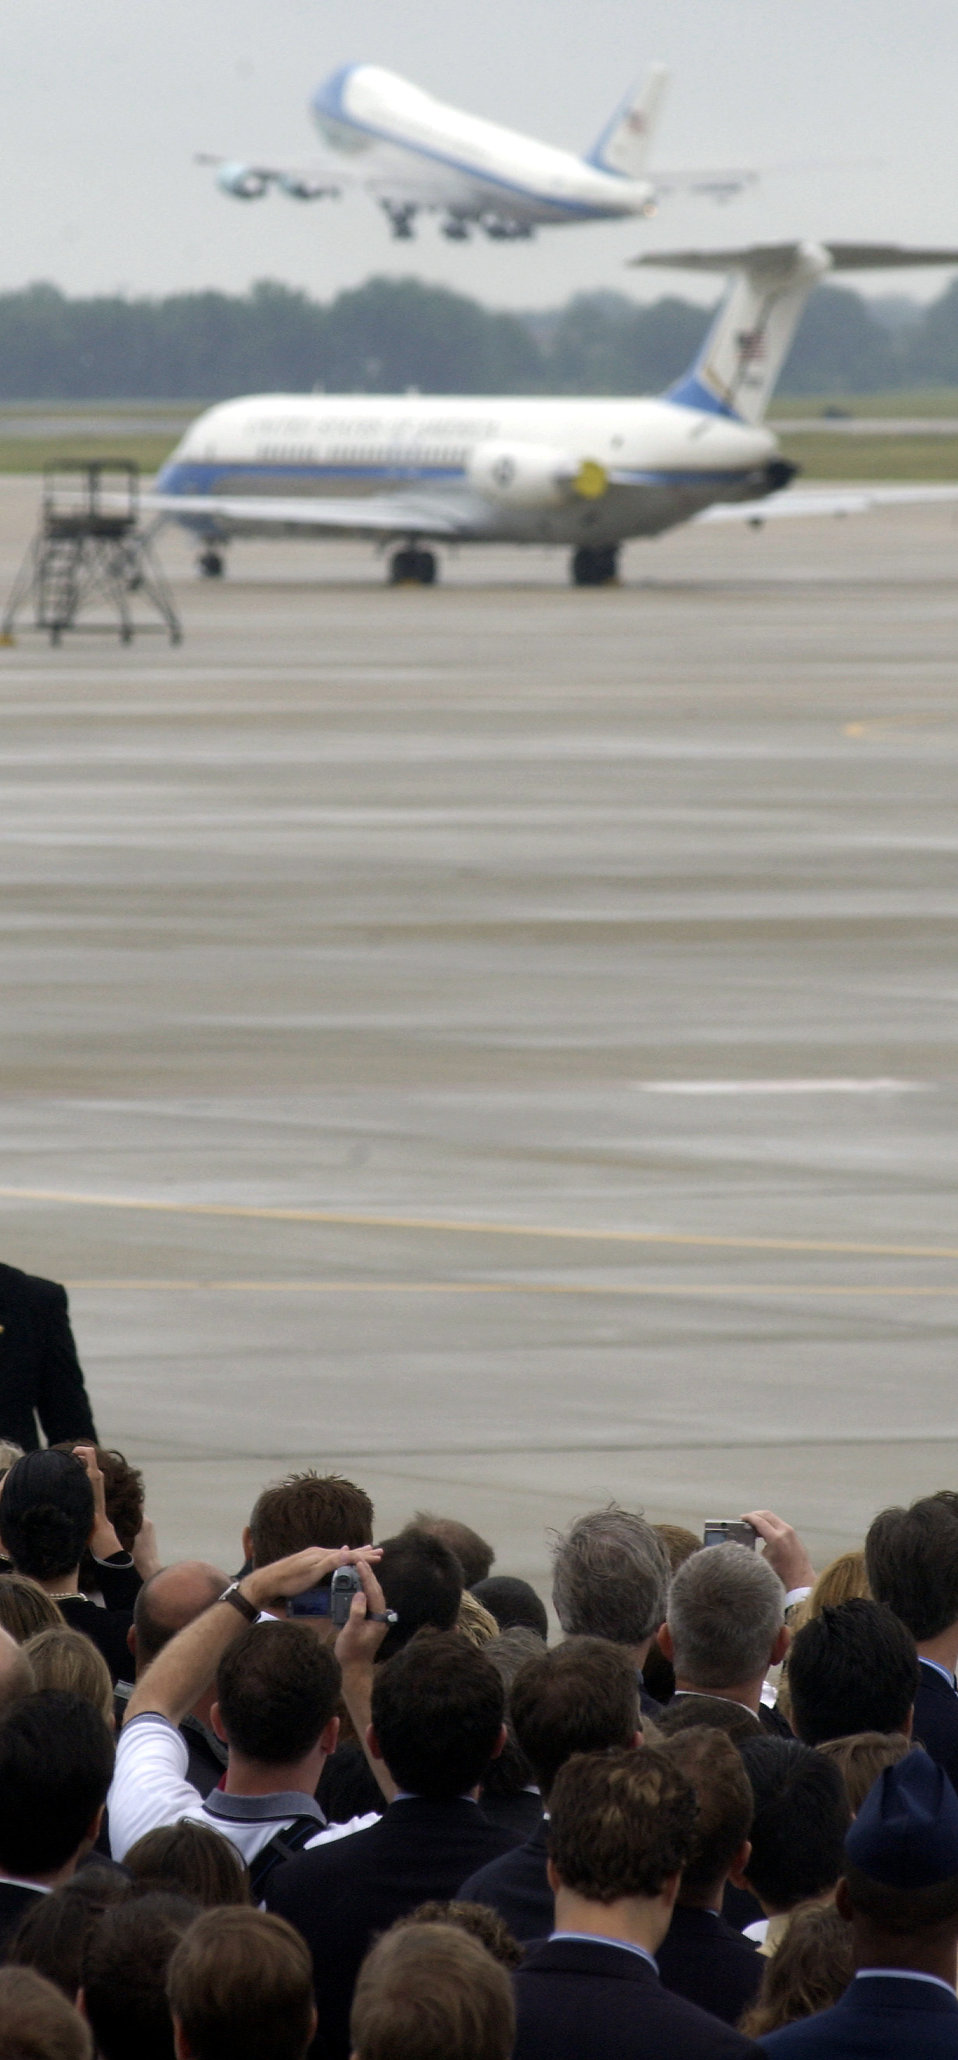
Farewell Mr. President

ANDREWS AIR FORCE BASE, Md. -- Thousands of well-wishers watch as a VC-25 takes off from the flightline here with former President Ronald Reagan's casket onboard following his state funeral service at the National Cathedral in Washington on June 11. President Reagan was flown to the nation's Capitol on June 9 following his death June 5. President Reagan's remains were flown to Simi Valley, Calif., for a private sunset burial.